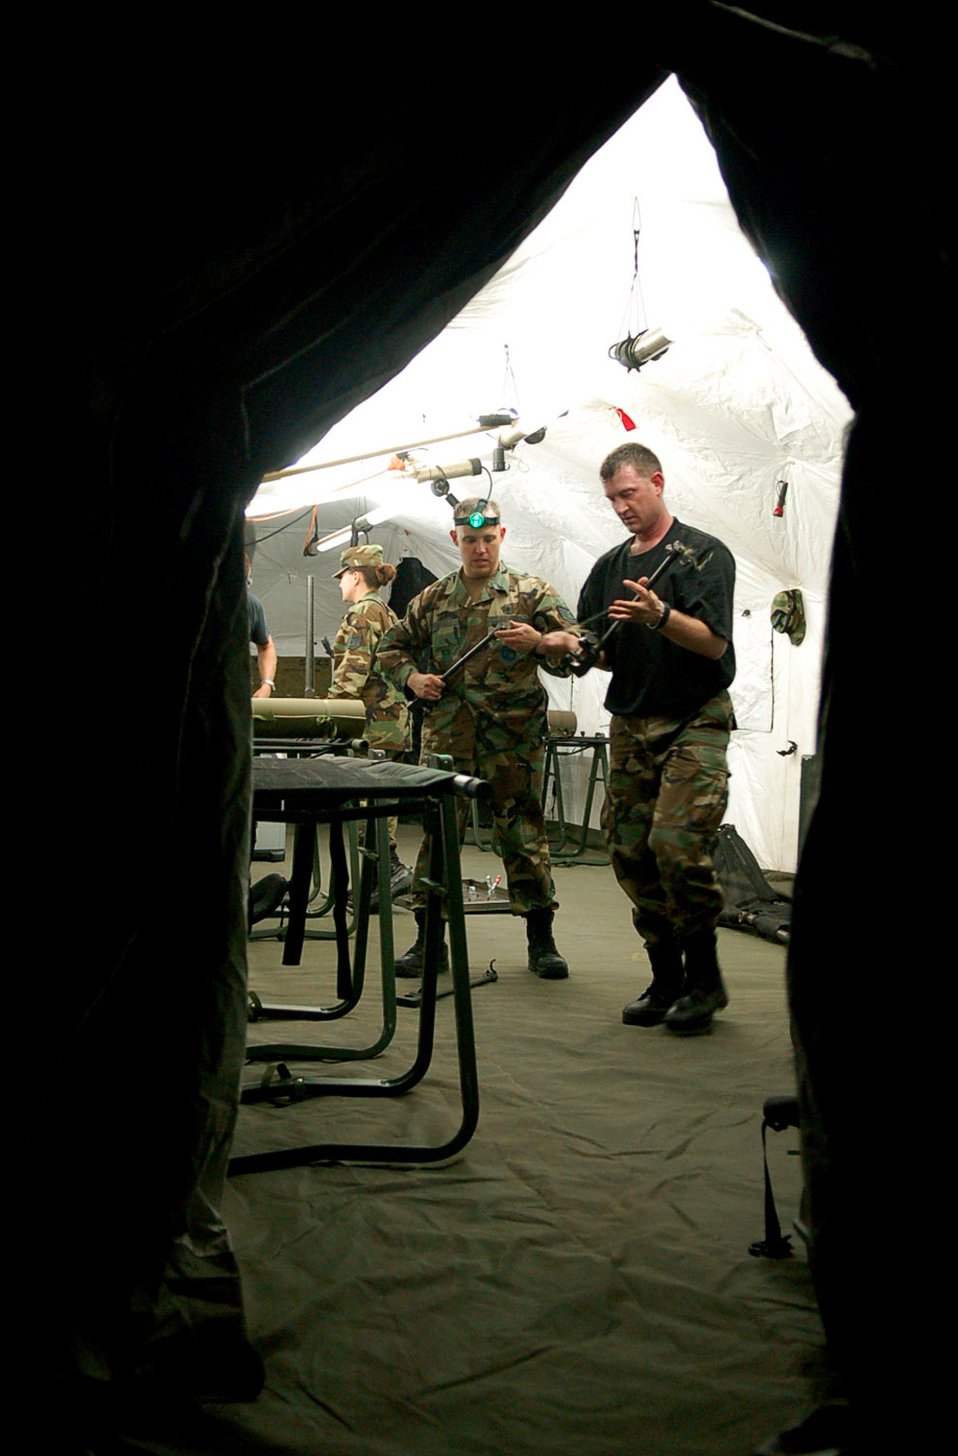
Mobile surgical team trains under cover of darkness

Working by the only light in a sea of darkness, Tech. Sgt. Bruce Graybill and Master Sgt. Troy Himes set up a mobile surgical team tent in an empty field at Soto Cano Air Base, Honduras, Oct. 18. The team set up the mobile operating room at night to practice setting up in limited visibility. The NCOs are members of the Joint Task Force-Bravo Medical Element.